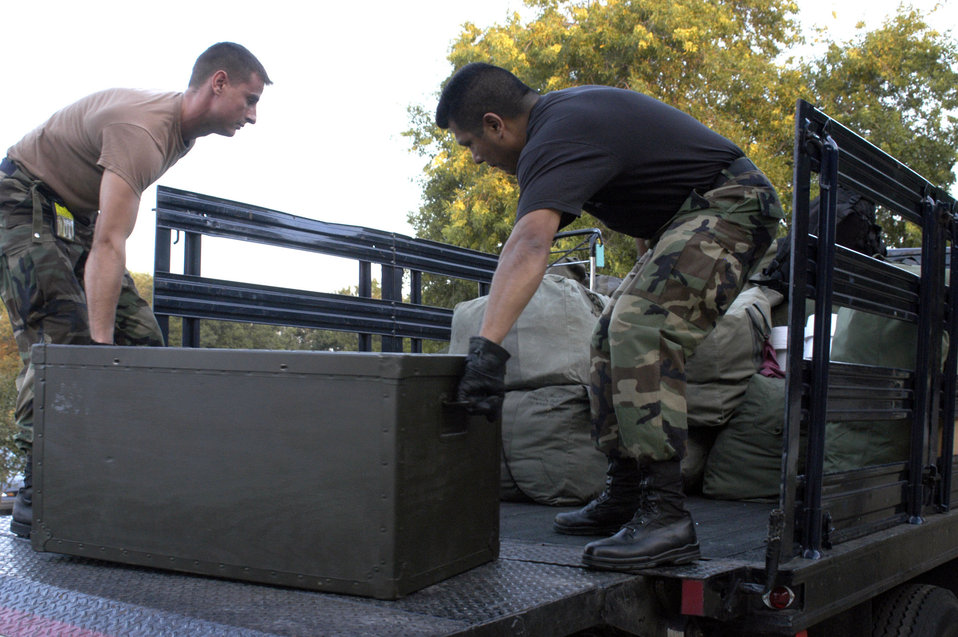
LACKLAND AIR FORCE BASE, Texas -- Two Airmen with the 149th Fighter Wing load equipment onto a truck as they prepare to join other guardsmen at the Army National Guard armory in Houston before traveling to Louisiana. Twenty-four Airmen with the wing's medical group will become part of a joint Army and Air Guard task force from Texas to assist hurricane recovery efforts in Louisiana.